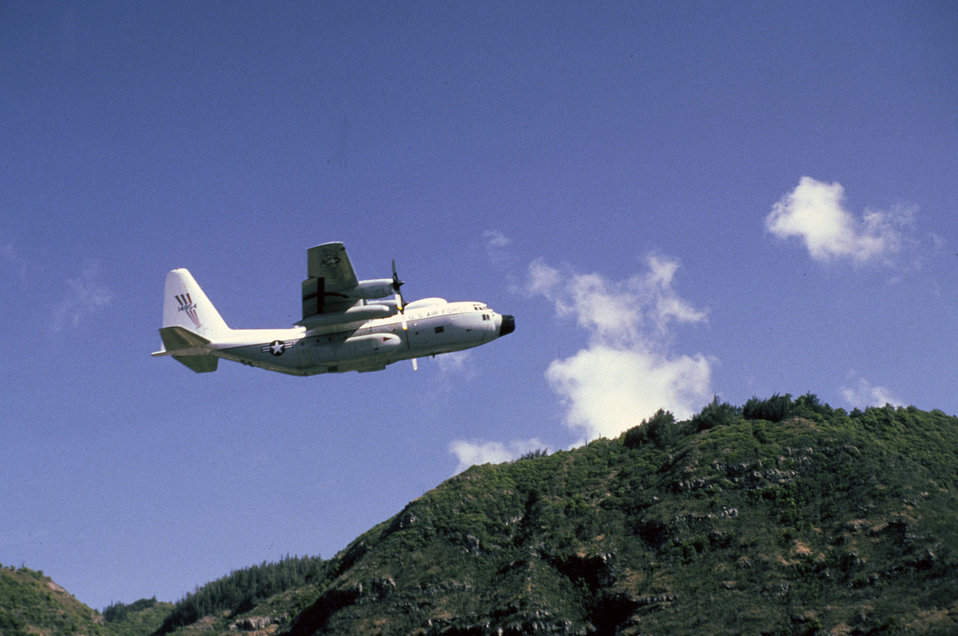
HC-130

1960s -- The HC-130 is a combat search and rescue version of the C-130 Hercules transport. The aircraft joined the Air Force inventory in 1964.